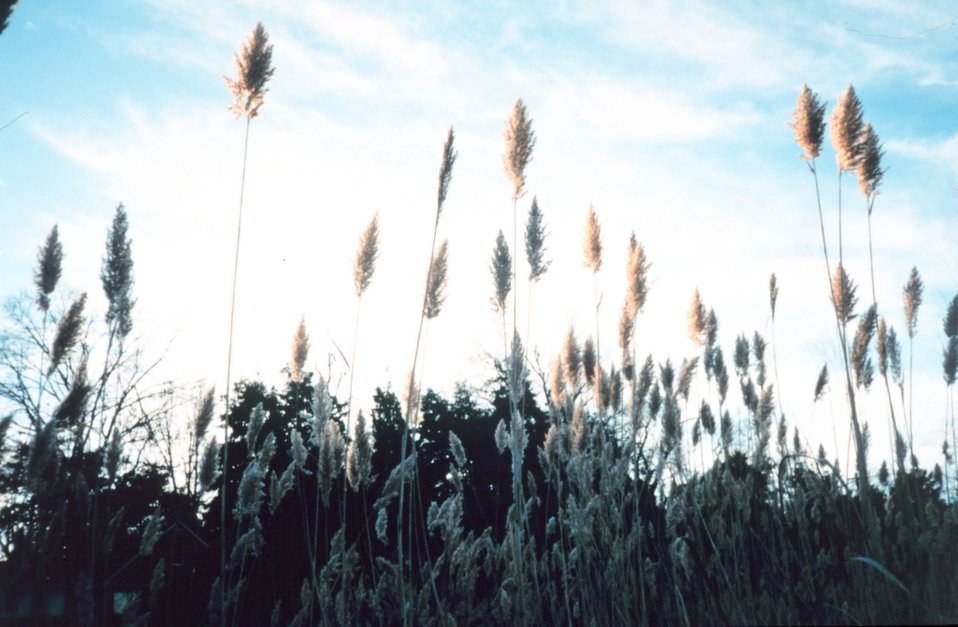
Phragmites, or common reed - although scenic, can be invasive nuisance species.